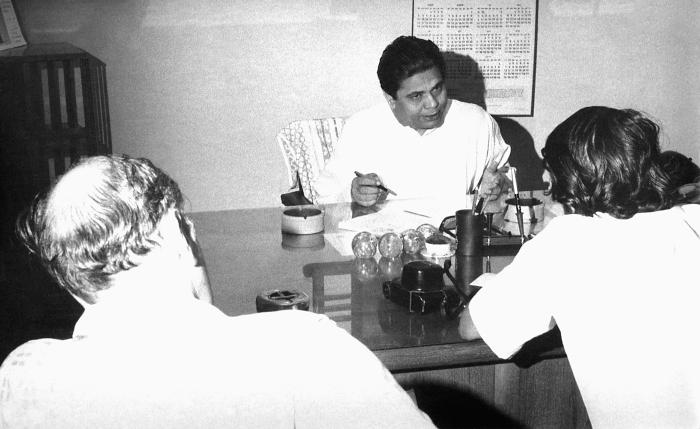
Though his name is unknown, this 1975 photograph depicted one of the Bangladesh Secretaries of Health, as he was seated behind his desk during a meeting with members of the smallpox eradication campaign. Integral to the success of the eradication efforts in Bangladesh, was convincing the governmental hierarchy of the need to carry out such a monumental undertaking on a country-wide scale, which at times was initially met with skepticism, but with the actualization of positive results, was soon adopted by all as the one and only way to finally rid Bangladesh, and for that matter, the entire world of this dreaded virus.